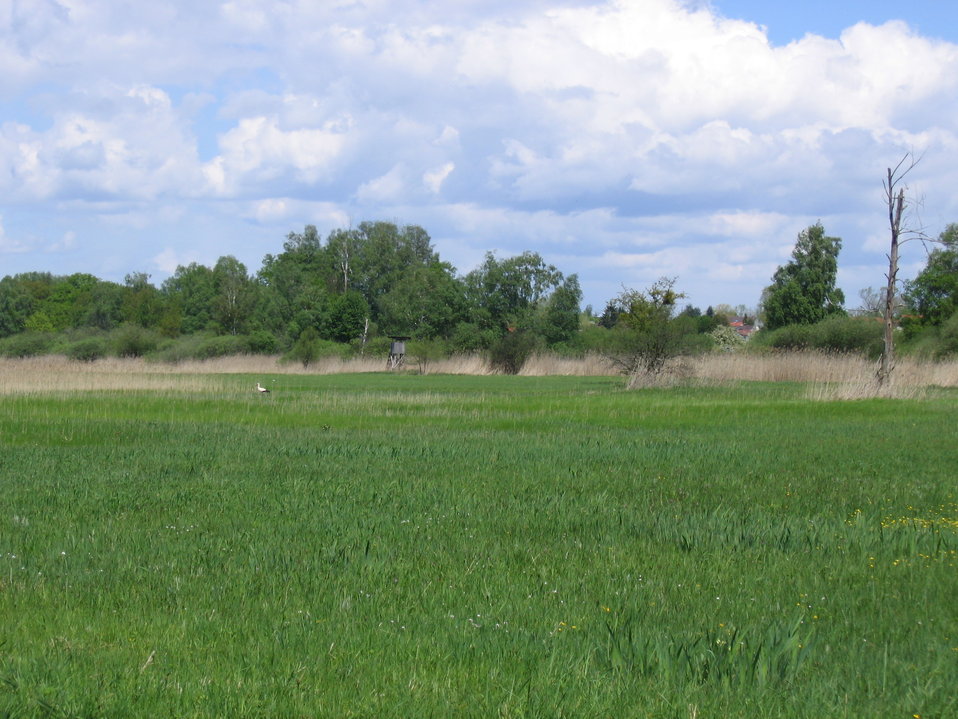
Deutsch: Deutschland - Baden-Württemberg - Bodenseekreis - Eriskirch: Riedwiese mit Weißstorch (Ciconia ciconia) im Eriskircher Ried